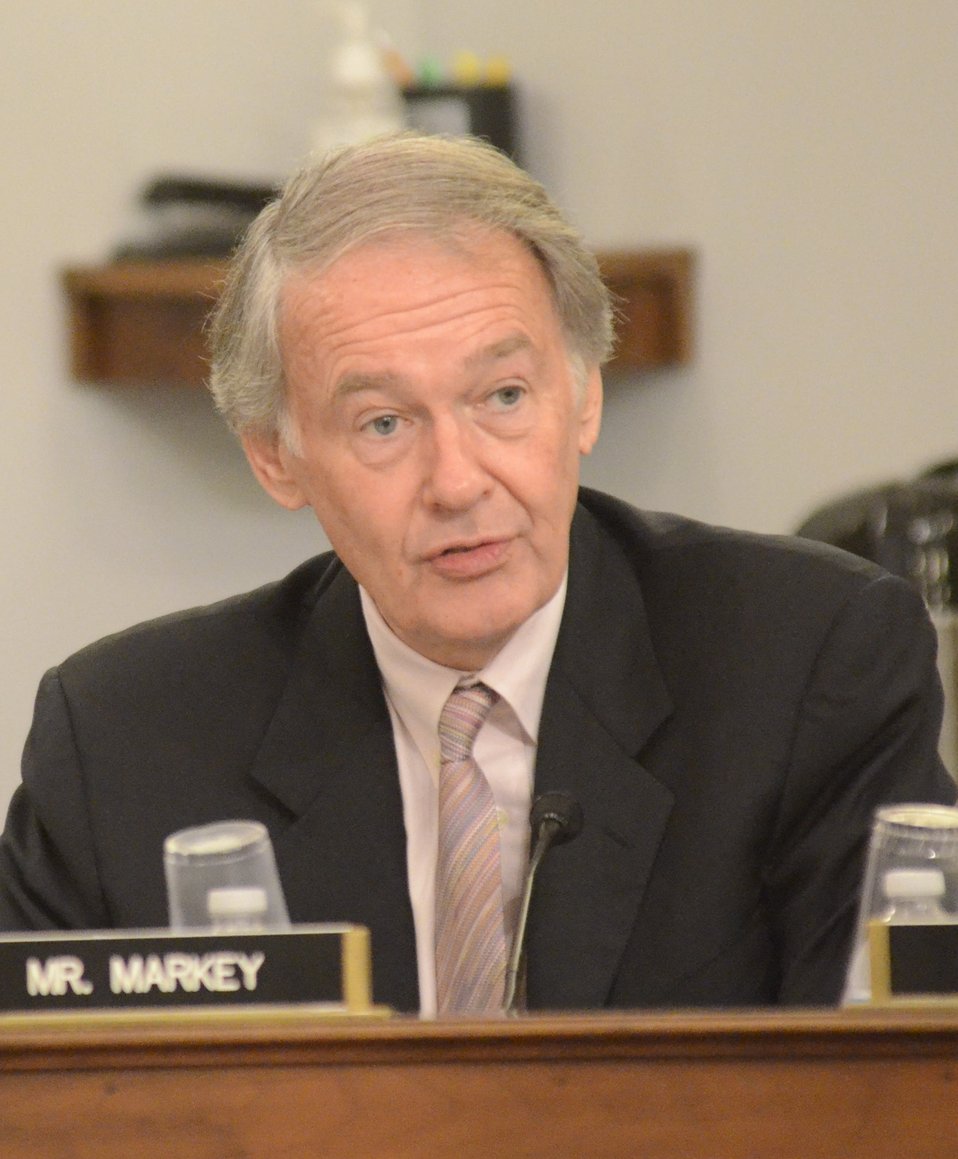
Natural Resources Committee member Congressman Ed Markey (MA) makes remarks at the hearing on Retailers & Entertainers Lacey Implementation & Enforcement Fairness Act & Freedom from Over-Criminalization & Unjust Seizures Act at the Longworth House Office Building in Washington, D.C. on Tuesday, May 8, 2012.